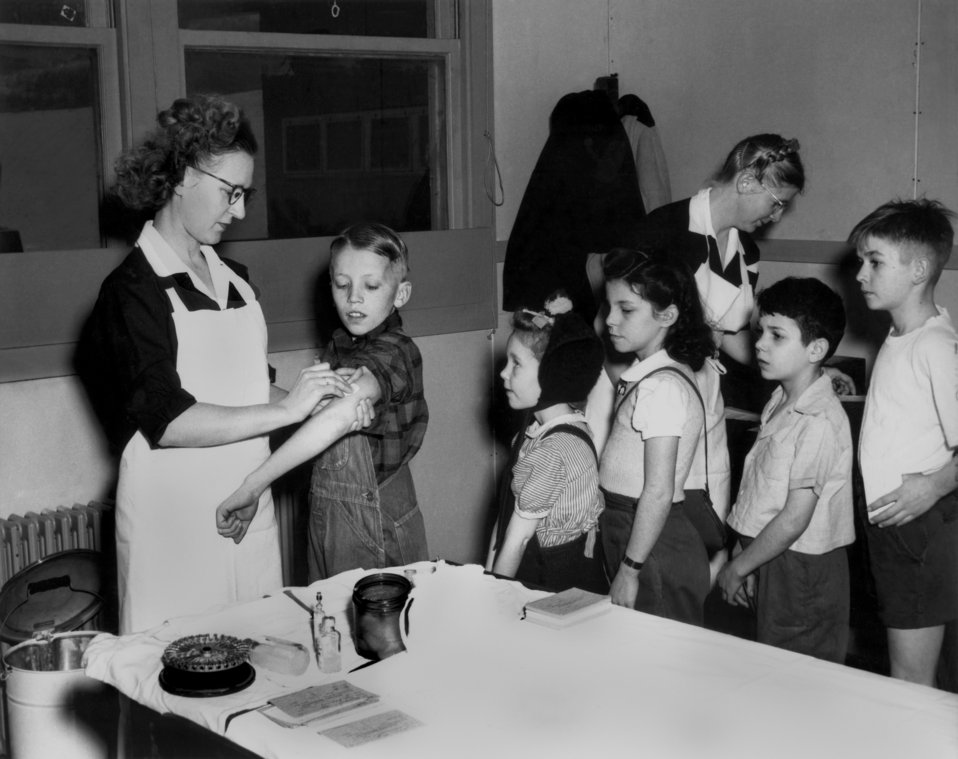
Public Health Inoculations Oak Ridge

1396-1 DOE photo Ed Westcott Public Health Inoculations Oak Ridge Tennessee 1-24-1946